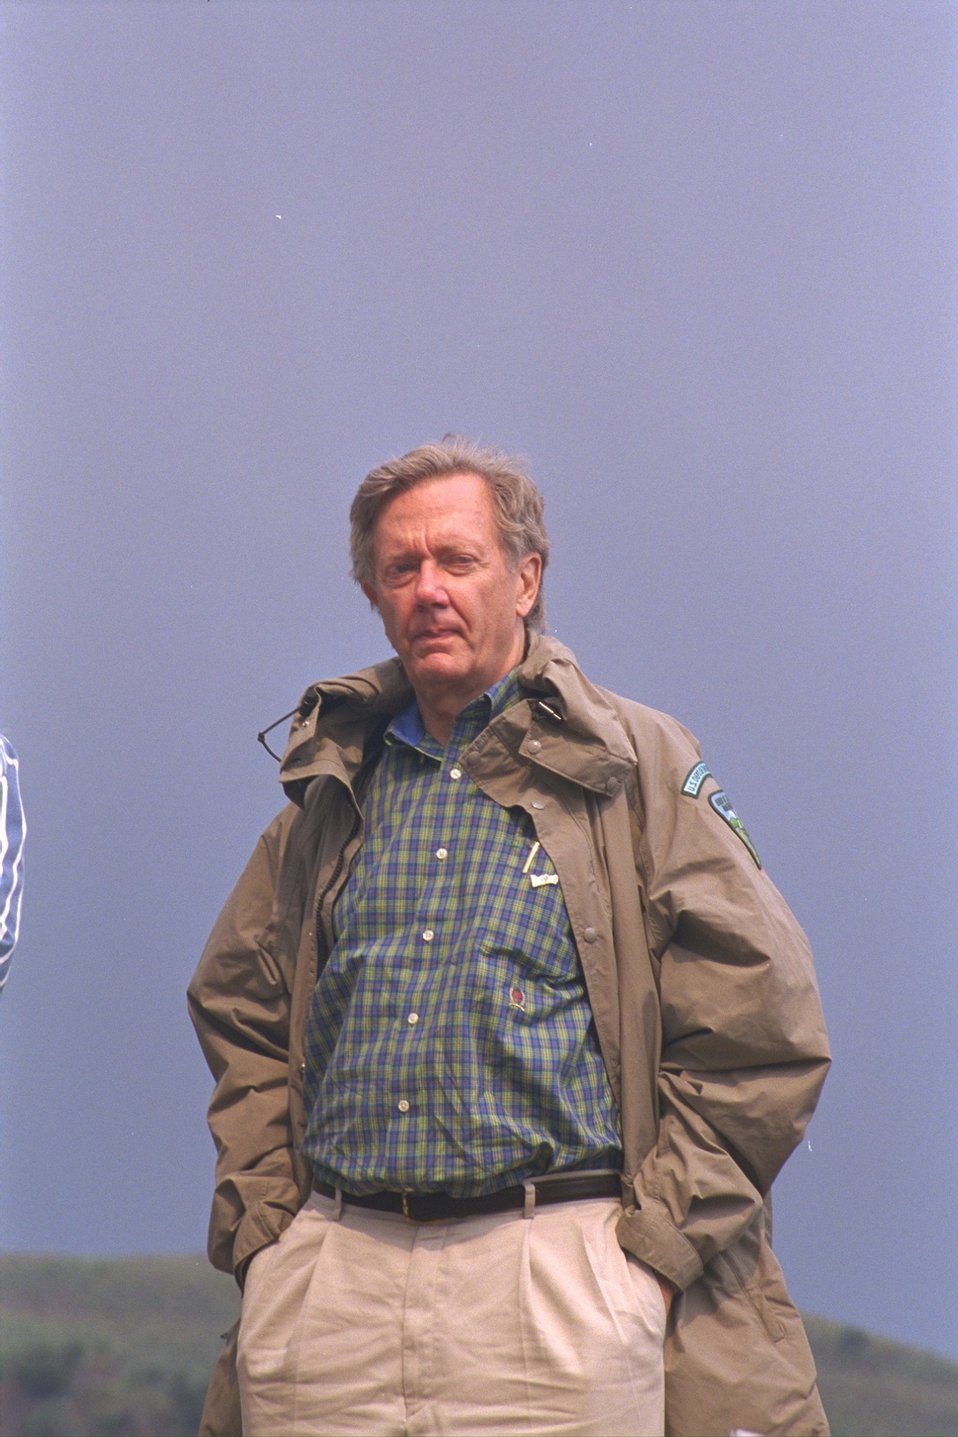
Secretary Babbitt at Big Indian Gorge overlook.